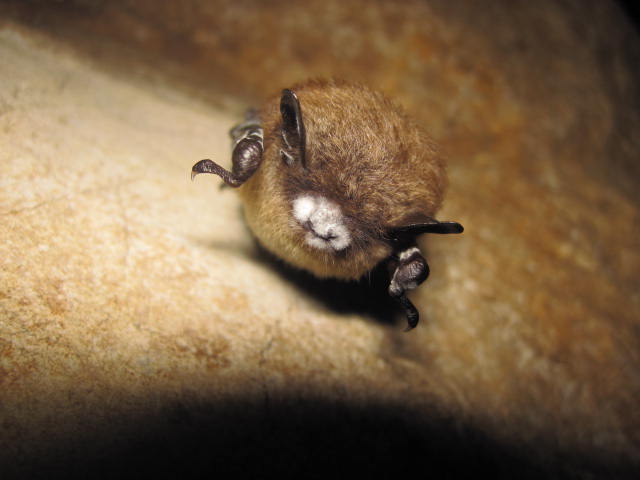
Bat with White-nose Syndrome in Great Smoky Mountains National Park